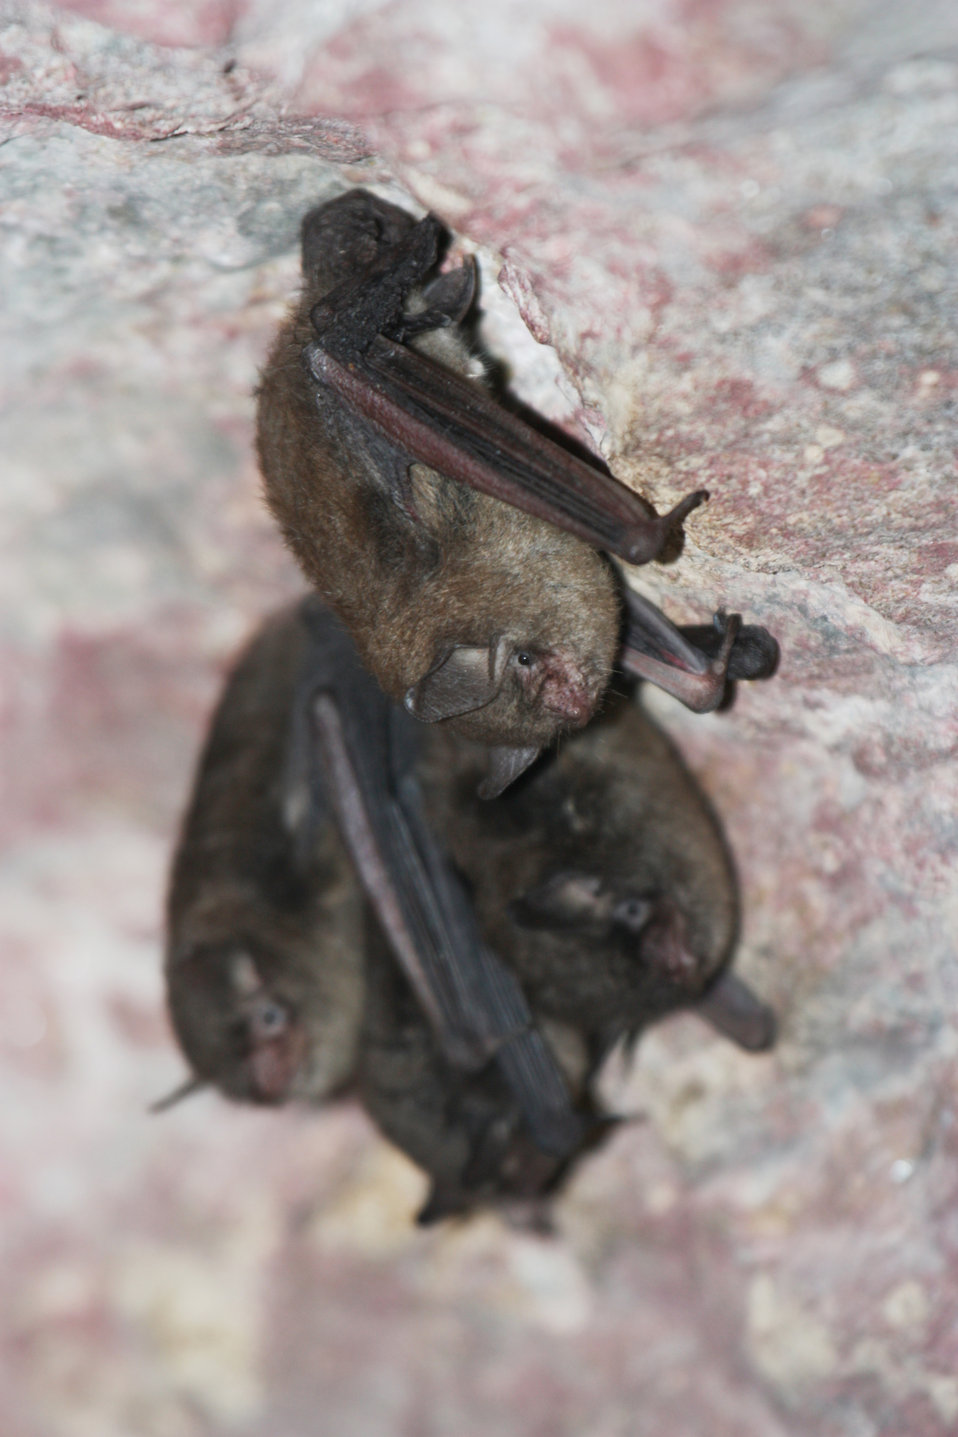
Indiana bats during a survey in Ohio.

Photo by USFWS; Andrew King